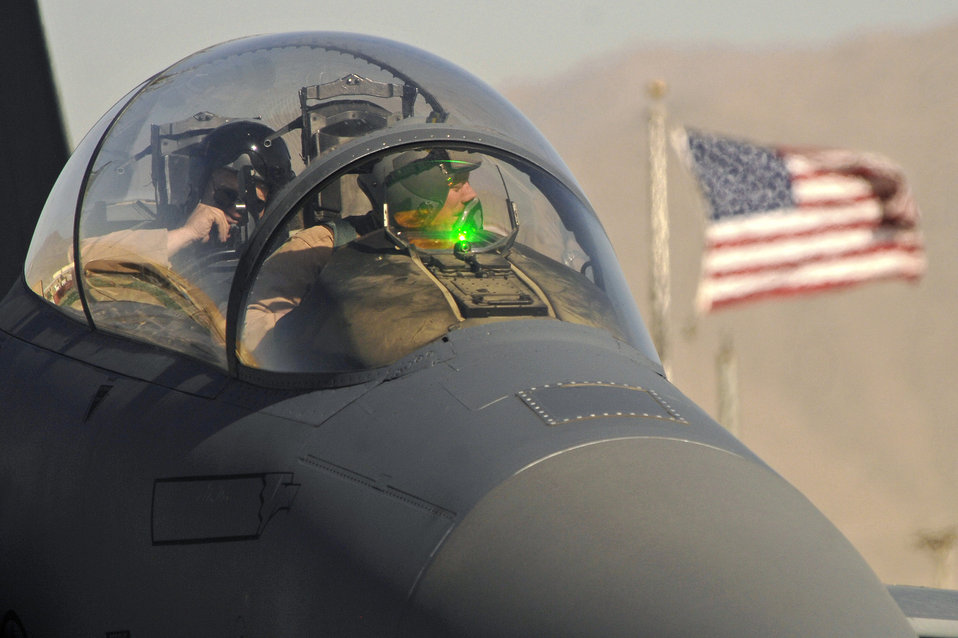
Duty, honor, country

An F-15E Strike Eagle pilot and weapon system operator from the 336th Expeditionary Fighter Squadron prepare to take off for a close-air-support mission June 9 at Bagram Airfield, Afghanistan. The aircraft assigned here provide close-air support and airborne intelligence, surveillance and reconnaissance for American and coalition ground troops.